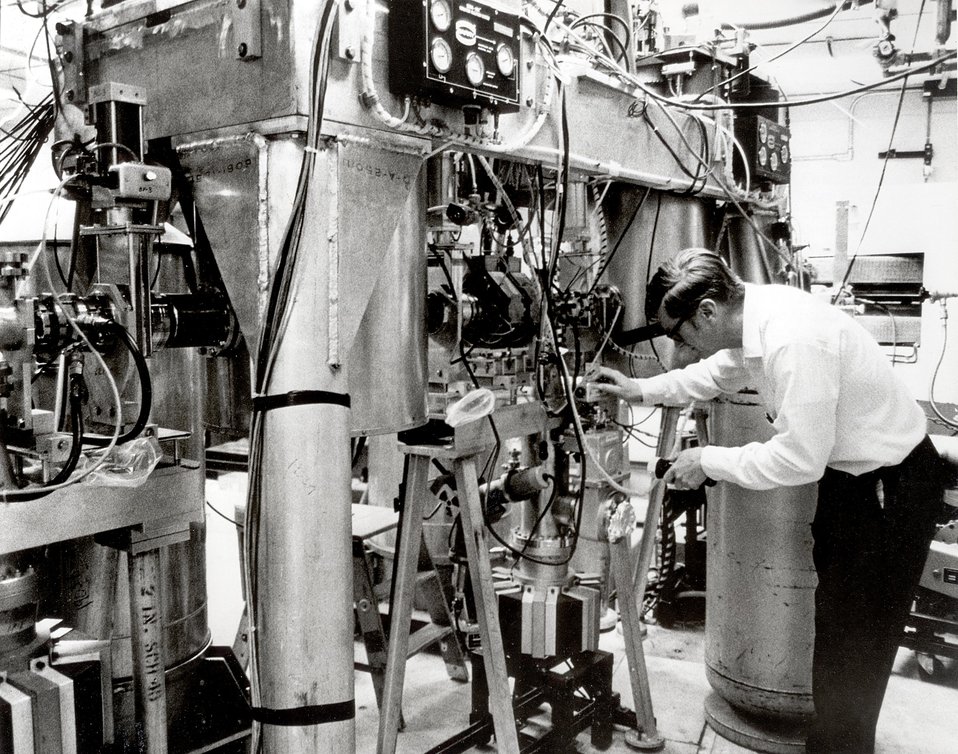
A prototype of a new heavy-ion accelerator undergoes tests at Argonne.
c.1973